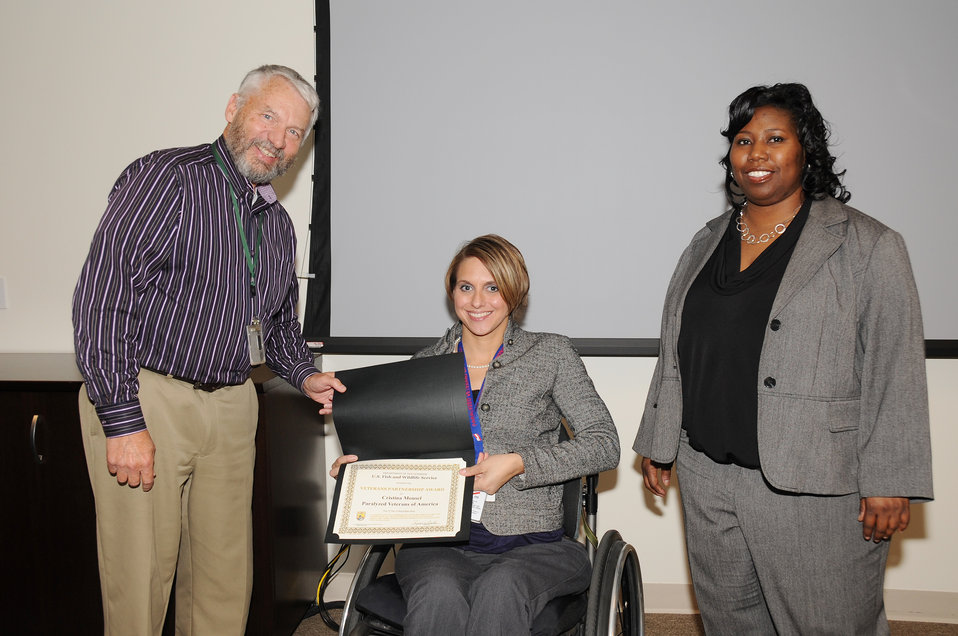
Honoring and Celebrating our Veterans

11.07.2012 Employees gathered in the Arlington Office to honor FWS Veterans